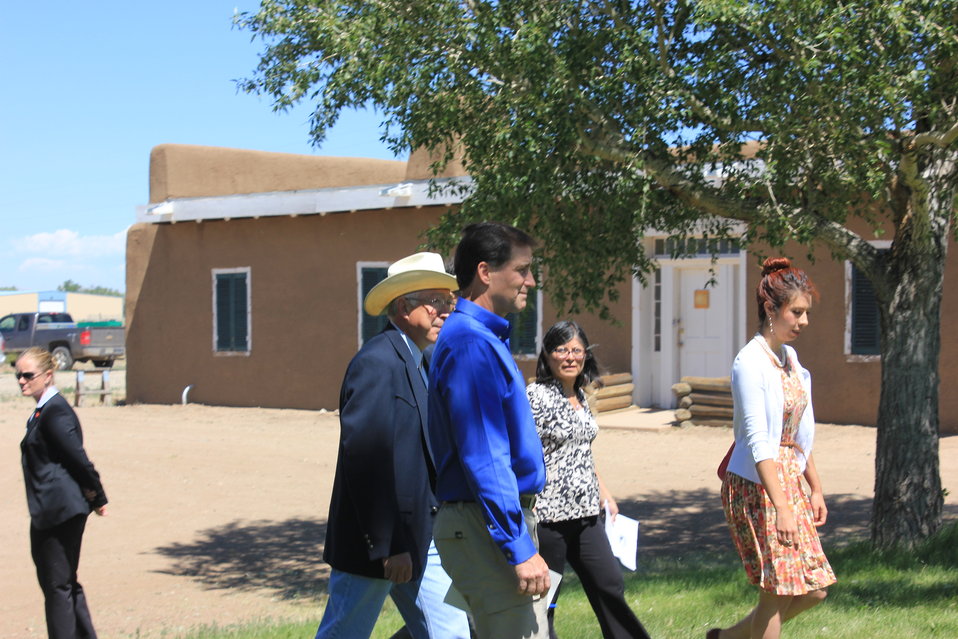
Historic Conservation Easement in Sangre de Cristo Mountains